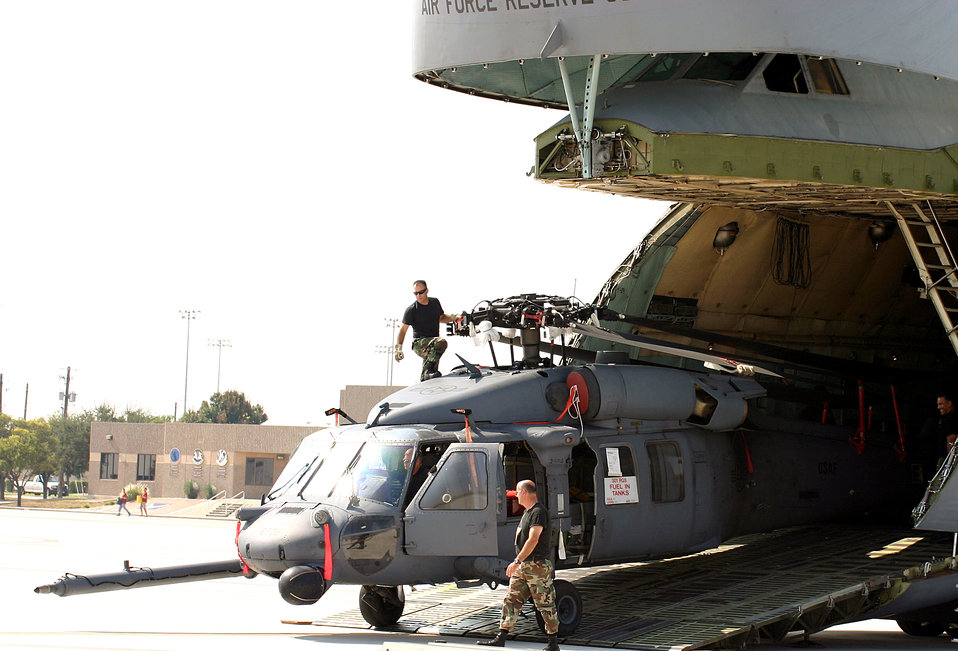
Ready for Rita

LAUGHLIN AIR FORCE BASE, Texas -- Members of the 920th Rescue Wing from Patrick Air Force Base, Fla., unload one of three HH-60 Pave Hawk helicopters here Sept. 23. A C-5 Galaxy crew from Westover Air Reserve Base, Mass., delivered members of the search and rescue wing to pre-position the helicopters in response to Hurricane Rita, which is expected to hit landfall Sept 24. Two additional Pave Hawks from Davis-Monthan AFB, Ariz., flew here Sept. 22 to support hurricane relief efforts.